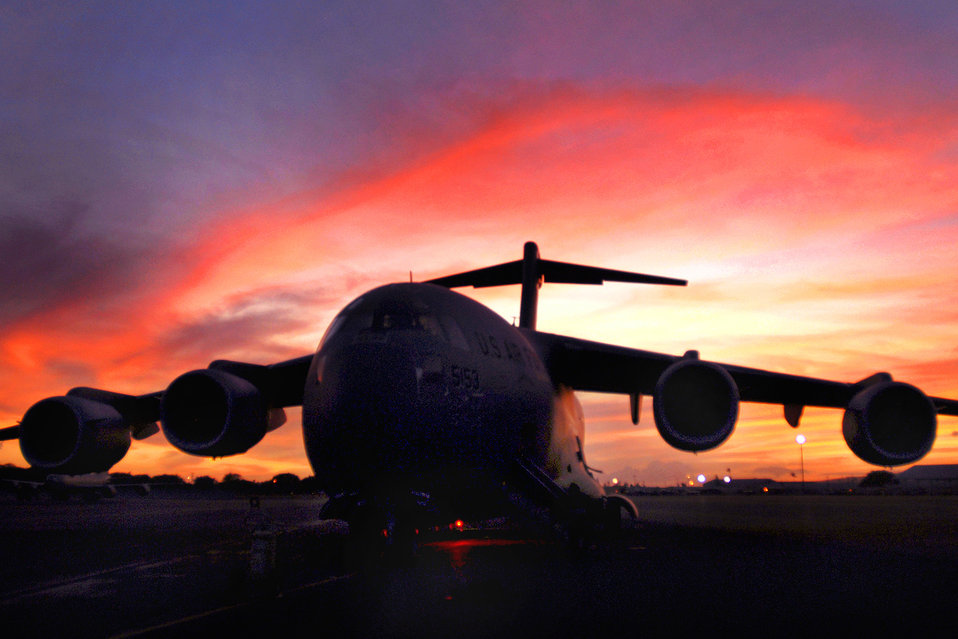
Relief is on the way

A C-17 Globemaster III sits on the flightline at Hickam Air Force Base, Hawaii, Sept. 30, 2009, as crews prepare to deliver humanitarian supplies to the Samoa region, which was devastated by a tsunami. A contingent from Hawaii, including Hawaii National Guard and Hawaii Air National Guard, took off for American Samoa with relief supplies and equipment to assist in the region.